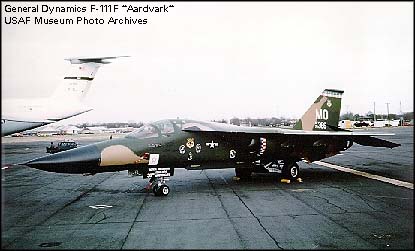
F-111 Aardvark

1960's -- The versatile